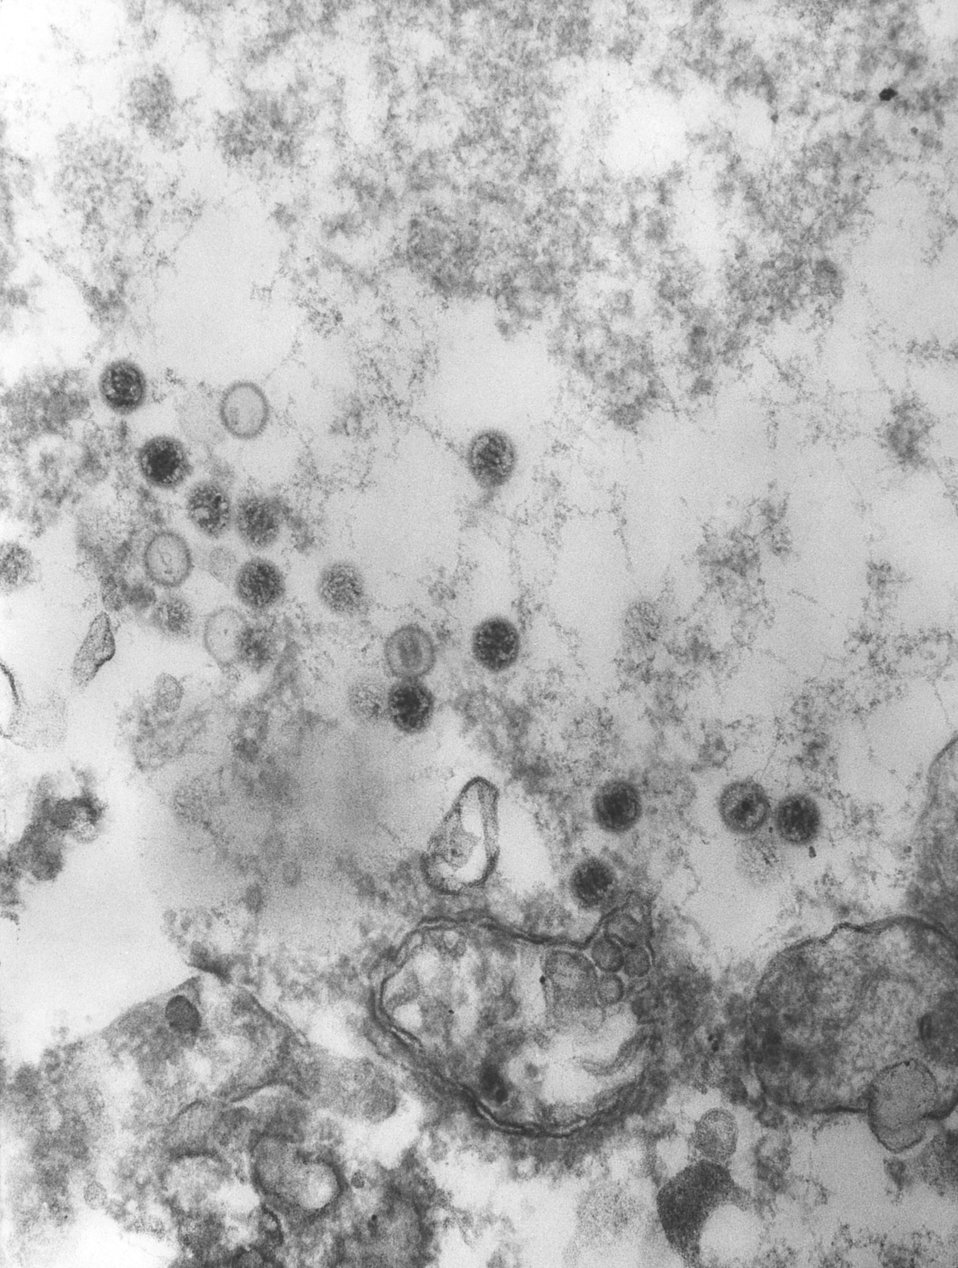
This negatively-stained transmission electron micrograph (TEM) revealed the presence of numerous Epstein-Barr virus (EBV) virions, members of the Herpesviridae virus family. EBV is also known as Human herpesvirus 4 (HHV-4). At the core of its proteinaceous capsid, the EBV contains a double-stranded DNA (ds DNA) linear genome.